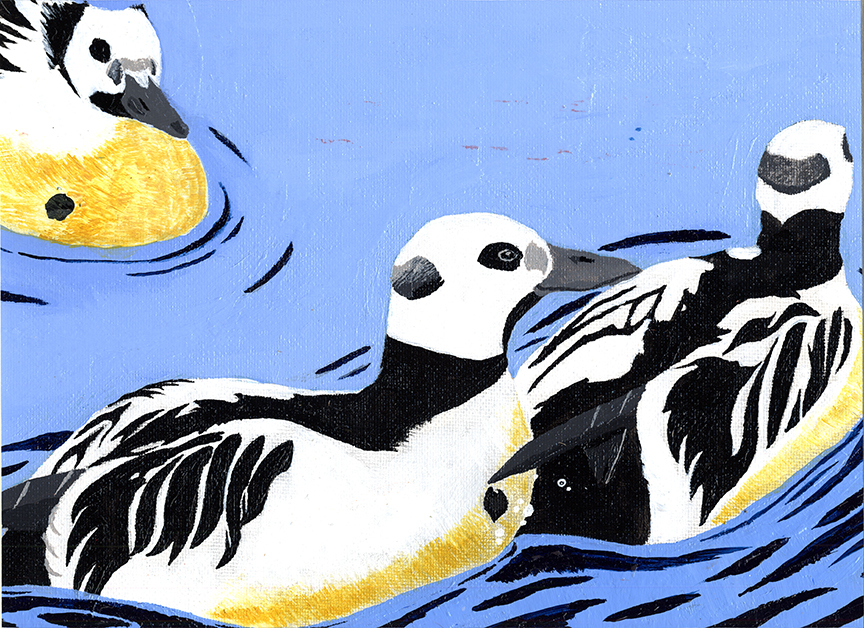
JRDuck2013AK

2013 Junior Duck Stamp Best of Show-Alaska